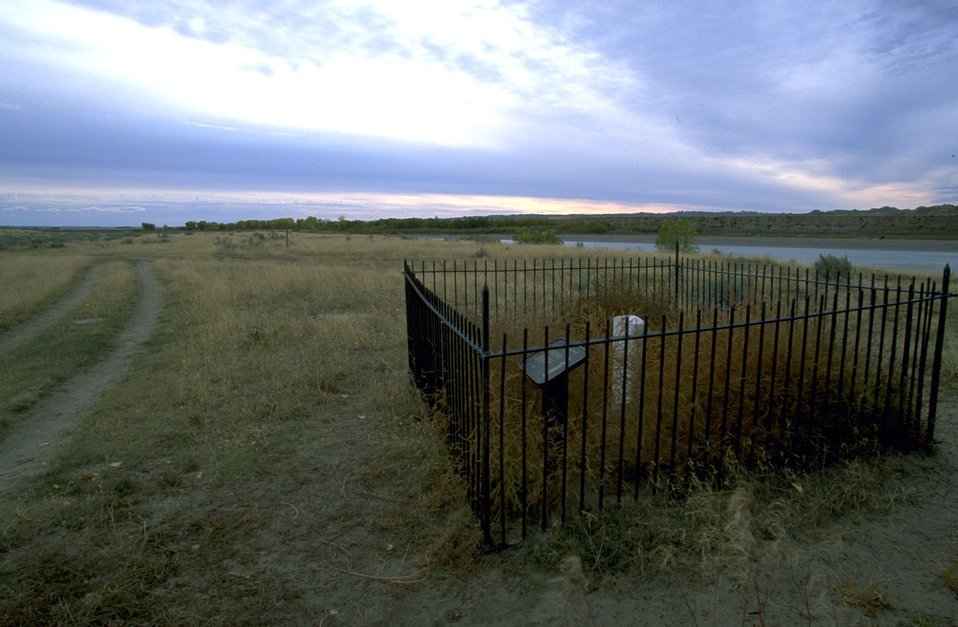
Gravesite of William George at Powder River Depot with Yellowstone River in the background